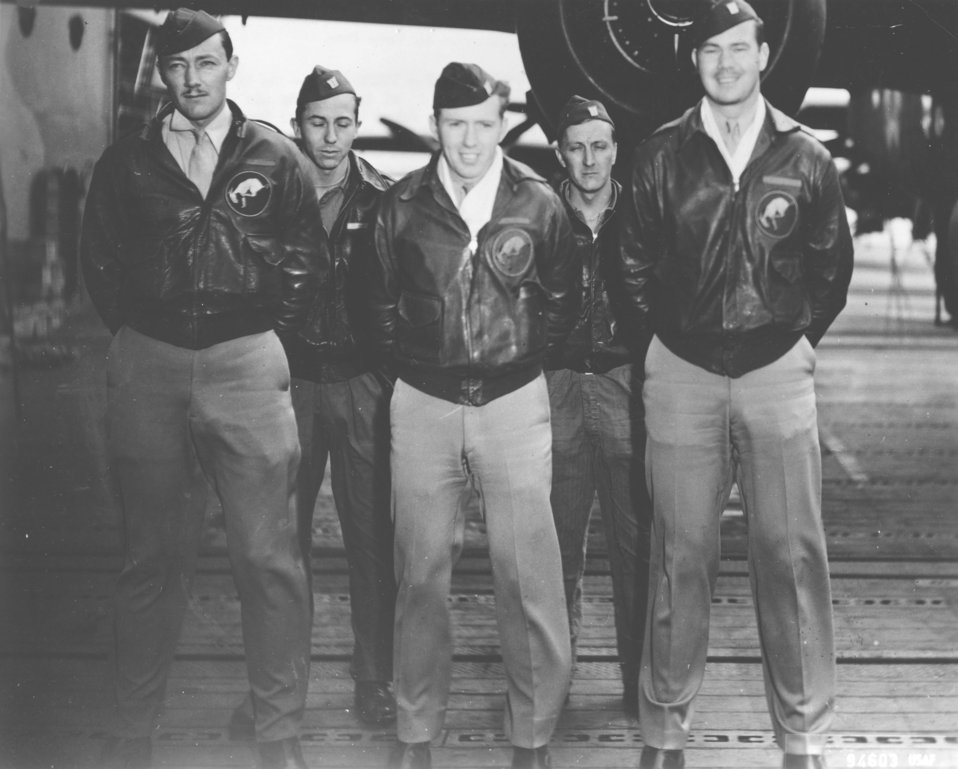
Doolittle Tokyo Raiders, Crew No. 4

Crew No. 4 (Plane #40-2282, target Tokyo): 95th Bombardment Squadron, front row: Lt. Everett W. Holstrom, pilot; and Lt. Lucian N. Youngblood, copilot; back row: Lt. Harry C. McCool, navigator; Sgt. Robert J. Stephens, bombardier; and Cpl. Bert M. Jordan, flight engineer/gunner.